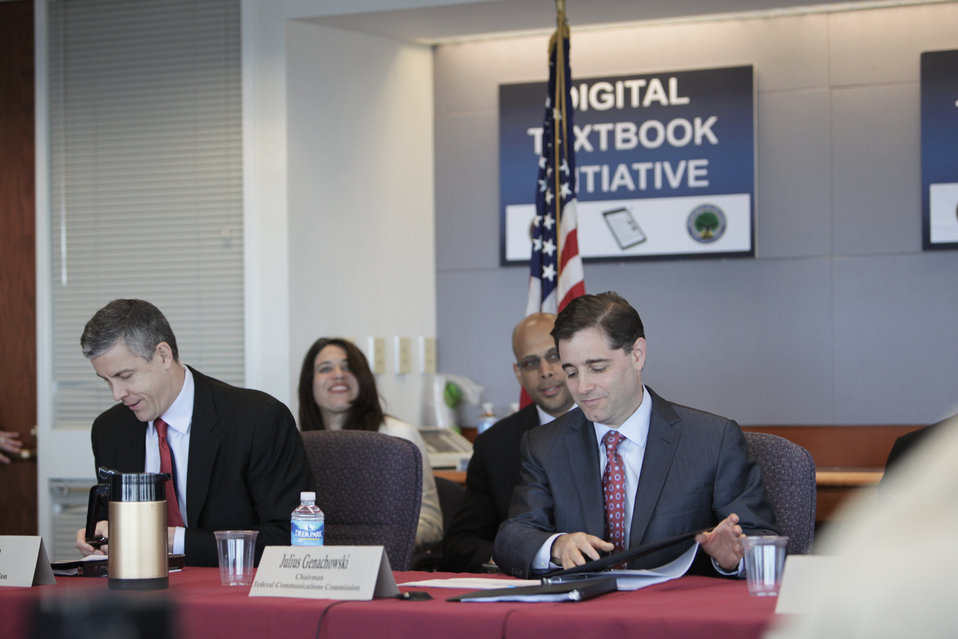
FCC Chairman Host Leaders From the Digital Education Ecosystem

U.S. Education Secretary Arne Duncan and FCC Chairman Julius Genachowski prepares to speak about adoption of digital textbooks at FCC's HQ in Washington, DC on March 29, 2012.